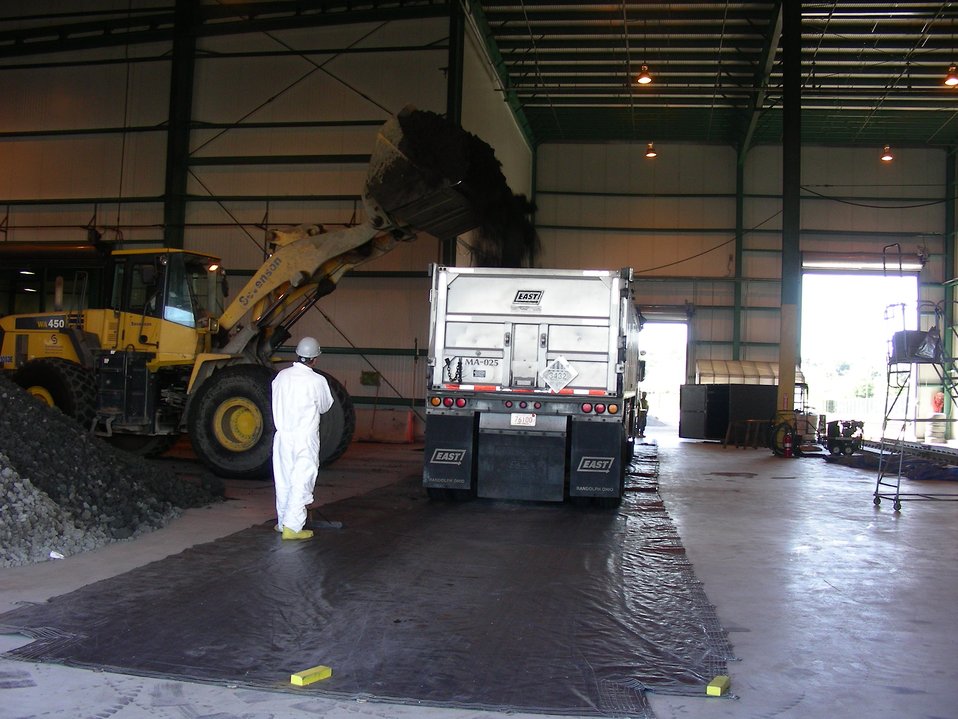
August 2012, Final 'product' at the New Bedford Harbor Superfund Site

Loading dewatered sediment, known on the project as 'filter cake', into a truck for transportation to a certified TSCA landfill in Michigan. The black tarp on the floor prevents the trucks from driving on contaminated sediment and avoids the chance for it to stick to the tire treads.